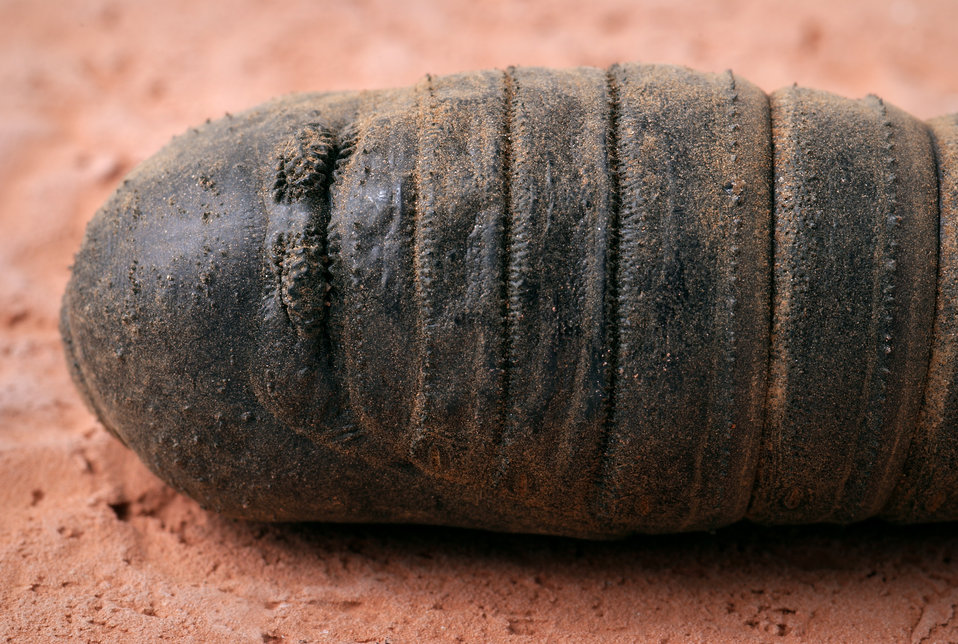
This 2008 image depicts a ventral view, i.e., from below, of a Regal Moth, Citheronia regalis pupa.